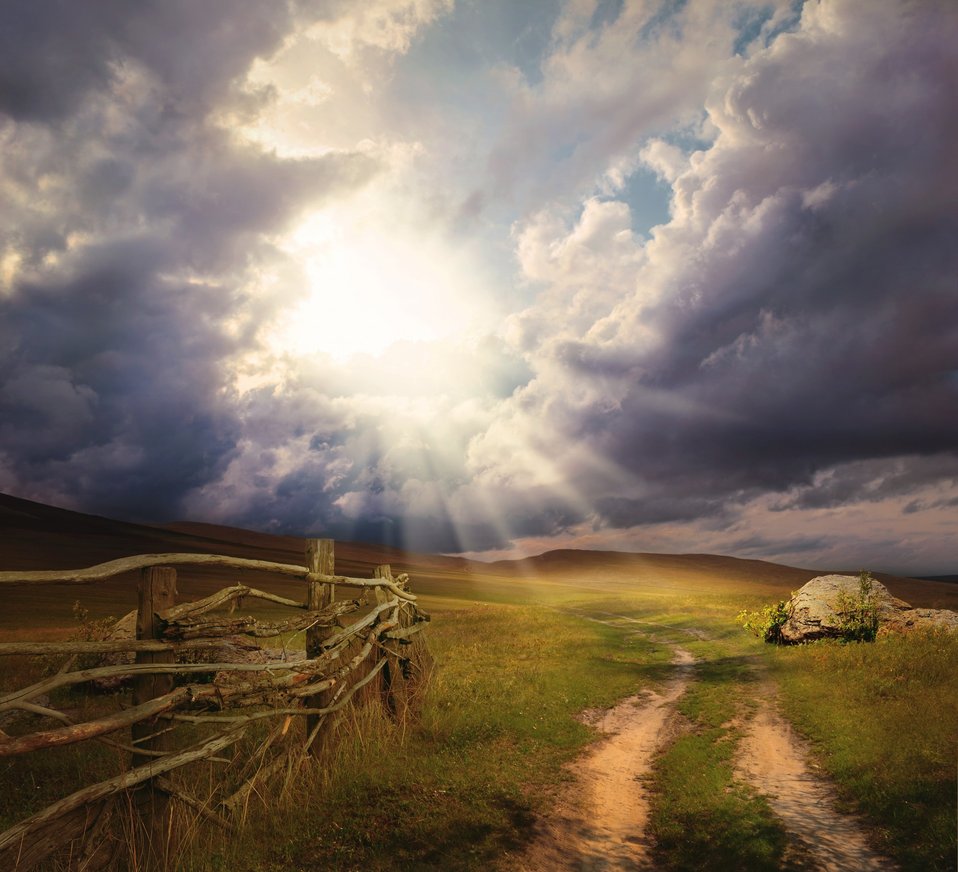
Fantastic landscape

A fantasy landscape with a road.